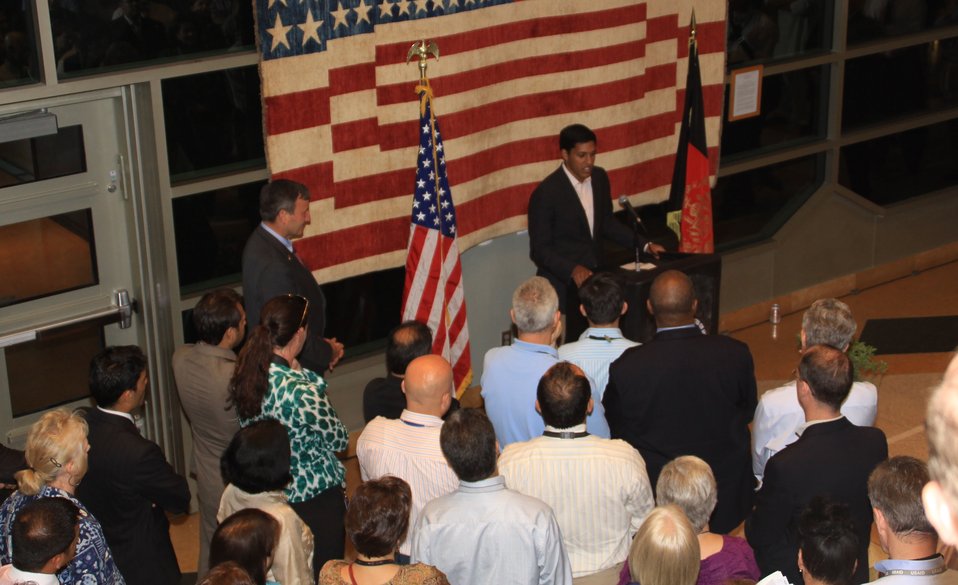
US Embassy Town Hall July 21, 2010